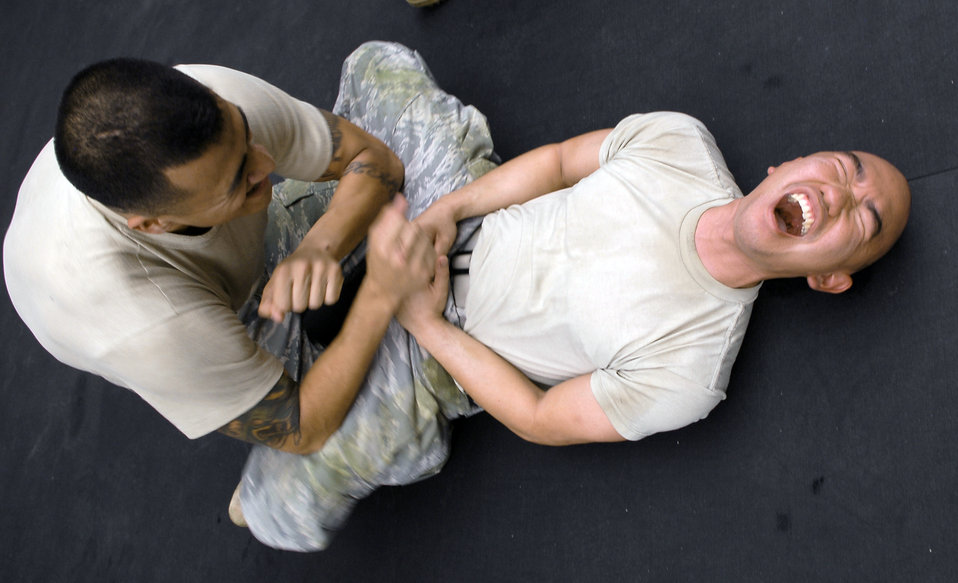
Luke Airmen train for combat

Staff Sgt. Abel Telles (left) elbows the inner thighs of Staff Sgt. Anthony Cubillo in an exercise called